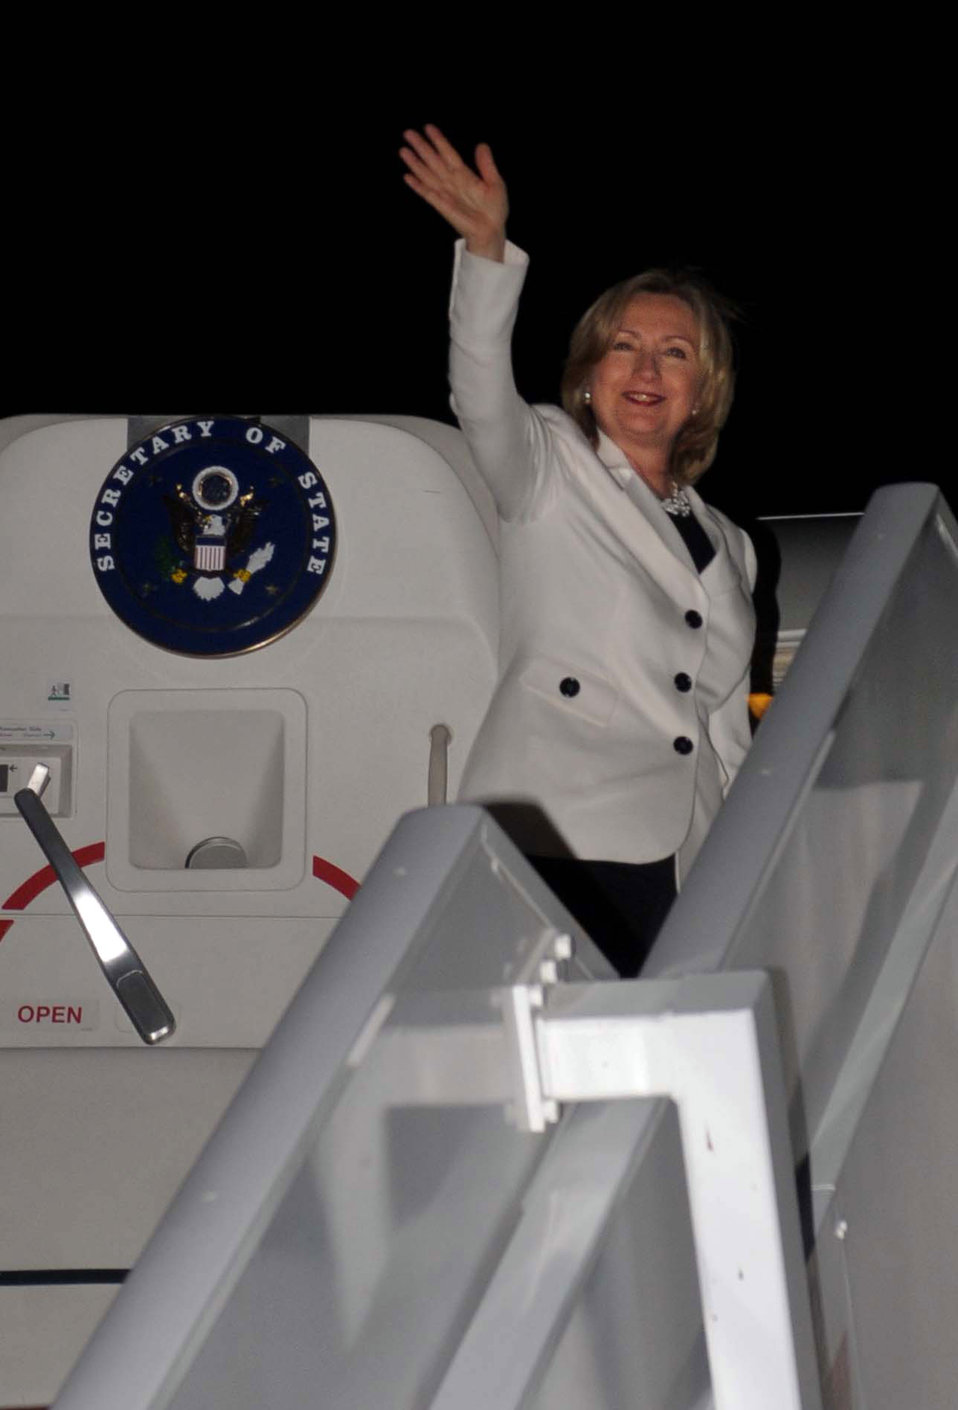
Secretary Clinton Waves Farewell to Egypt

U.S. Secretary of State Hillary Rodham Clinton waves farewell to Sharm El-Sheikh, Egypt, on September 14, 2010.